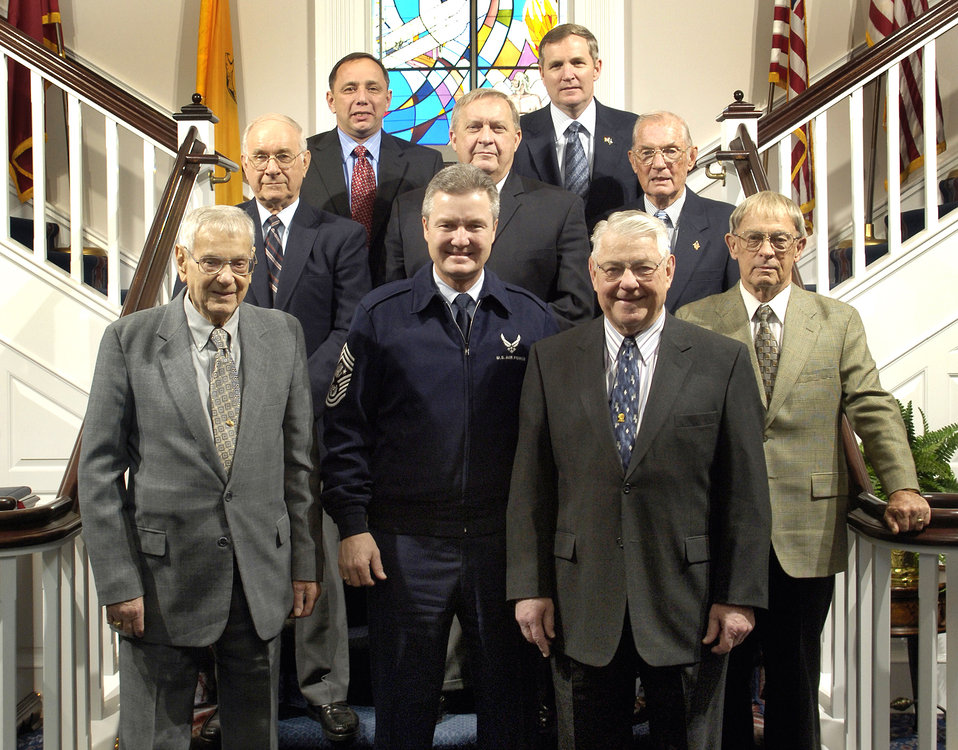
A gathering of chiefs

BOLLING AIR FORCE BASE, Washington, D.C. (AFPN) -- Former Chief Master Sergeants of the Air Force gather Feb. 14 with the current CMSAF Gerald Murray. From left, front row, are Paul Airey, Gerald Murray, Robert Gaylor, Gary Pfingston, Sam Parish, James Binnicker, James McCoy, Frederick Finch and Eric Benken.